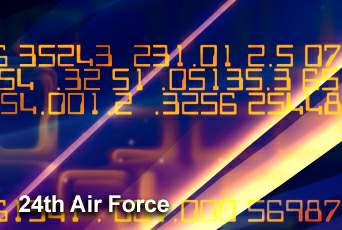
New numbered Air Force headquarters base selected

Lackland Air Force Base, Texas, has been selected as headquarters for the new 24th Air Force which will be focused on the cyber mission.